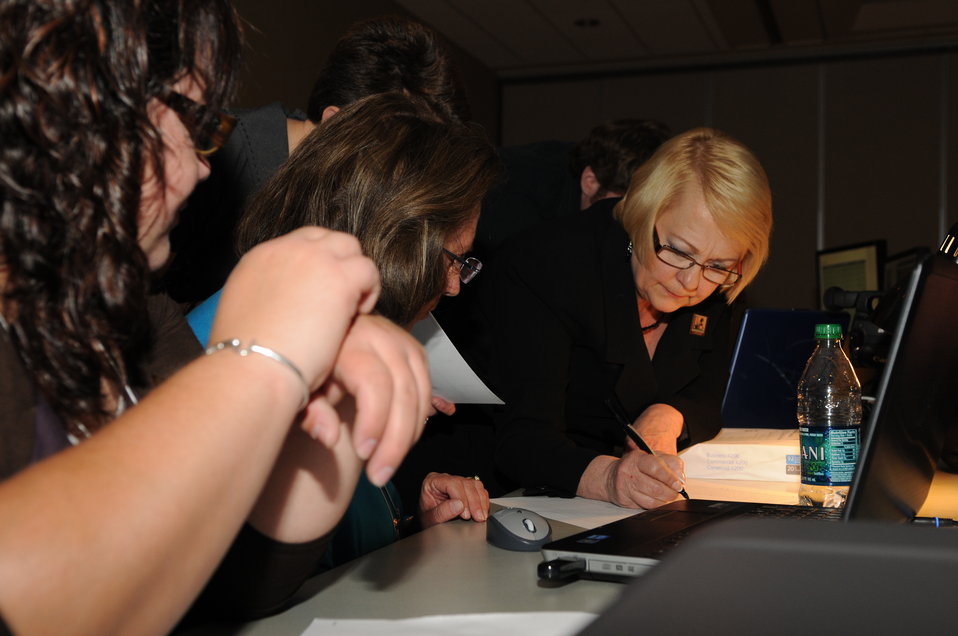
Staff

The U.S. Fish & Wildlife Service sponsored the 2012 Federal Duck Stamp Art Contest September 28 and 29 in Ogden, Utah, at Weber State University. A panel of five judges was responsible for choosing the art work used to design the 2013-2014 Migratory Bird Hunting and Conservation Stamp.